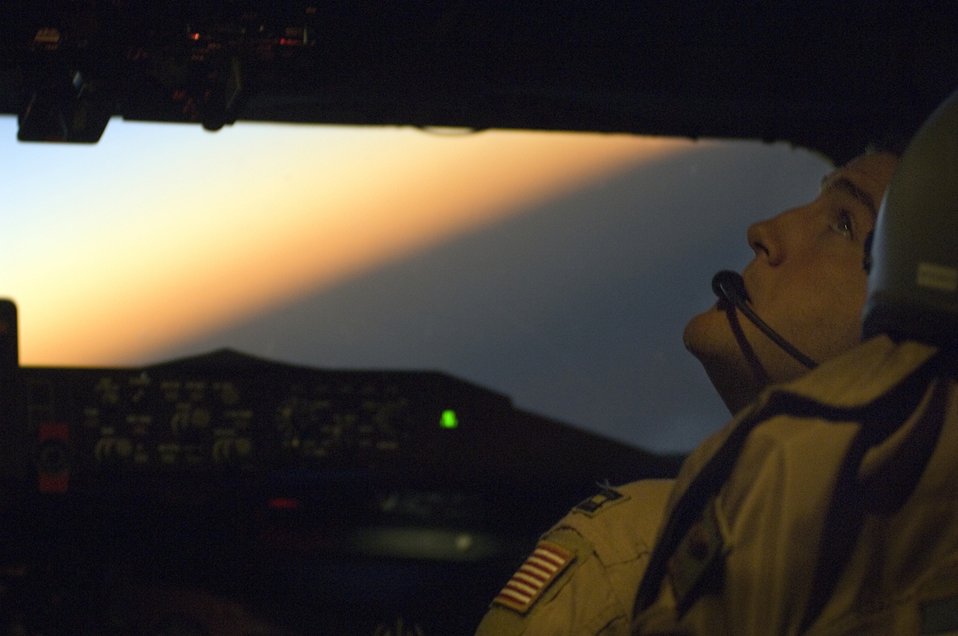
KC-135s keep them flying

Capt. James Post performs his co-pilot duties in a KC-135 Stratotanker while refueling an F-16 Fighting Falcon over Iraq in support of Operation Iraqi Freedom. On Jan. 29, U.S., French and Royal Air Force tankers flew 25 sorties and off-loaded almost 1.6 million pounds of fuel in support of OIF and Operation Enduring Freedom.